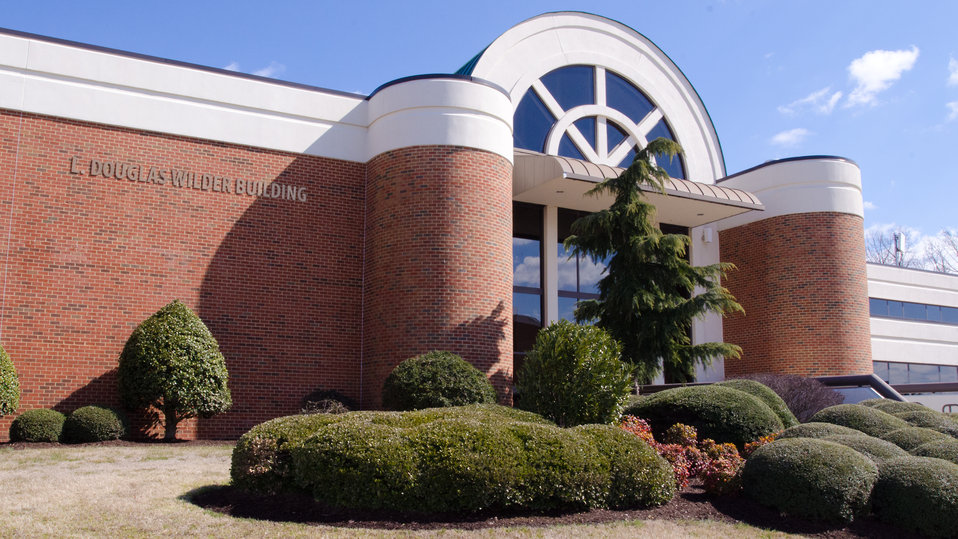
“Virginia State University (VSU), U.S. Department of Agriculture (USDA) and Virginia Farmers Working Together” outreach workshop in the VSU, L. Douglas Wilder building on Thursday, March 7, 2013, in Petersburg, VA.